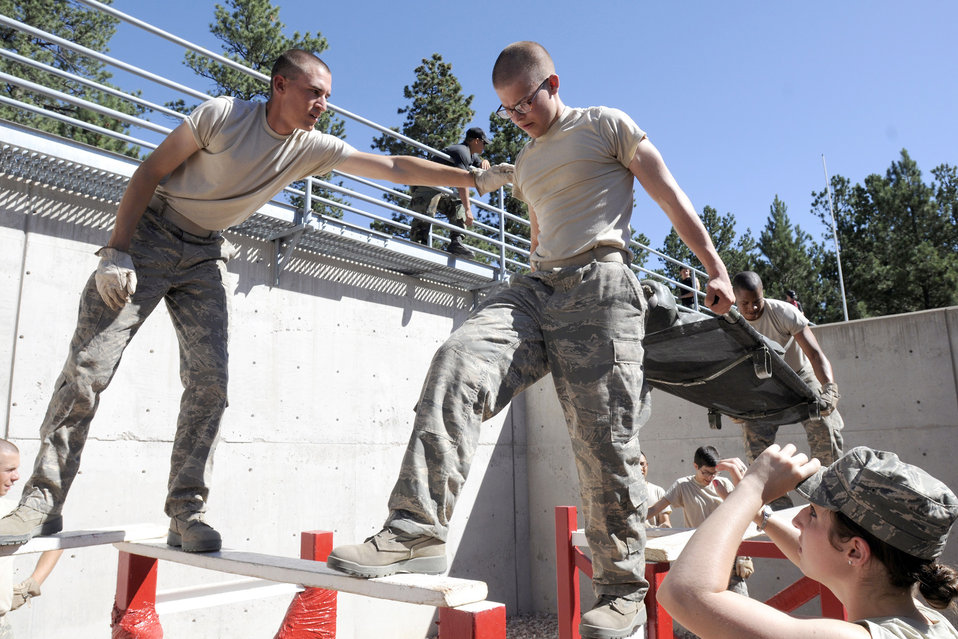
Cadets learn essential skills in Leadership Reaction Obstacle Course

Basic Cadet Dennis Murray helps steady his teammate Michael Hastriter Jr as he makes his way through an obstacle at the leadership reaction course at the U.S. Air Force Academy, Colo., July 16, 2010. The cadets learned essential problem solving and leadership techniques from the course.